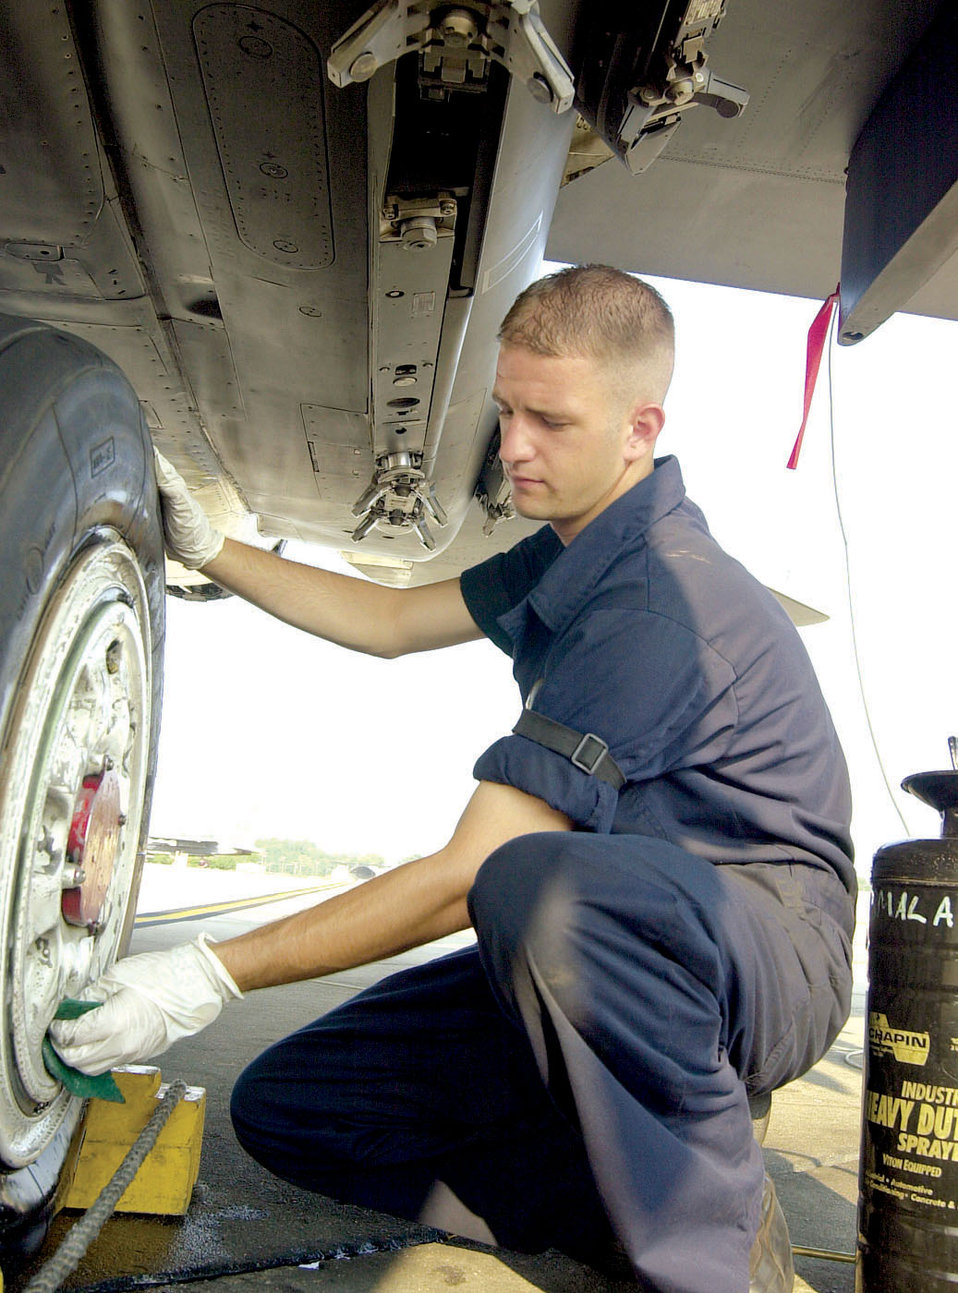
Ensuring Eagles fly

SEYMOUR JOHNSON AIR FORCE BASE, N.C. -- Senior Airman Andrew Montgomery cleans an F-15E Strike Eagle's tires. Crew chiefs must clean the tires one hour before takeoff to help get the jet ready for flight. Airman Montgomery is assigned to the 333rd Aircraft Maintenance Unit here.